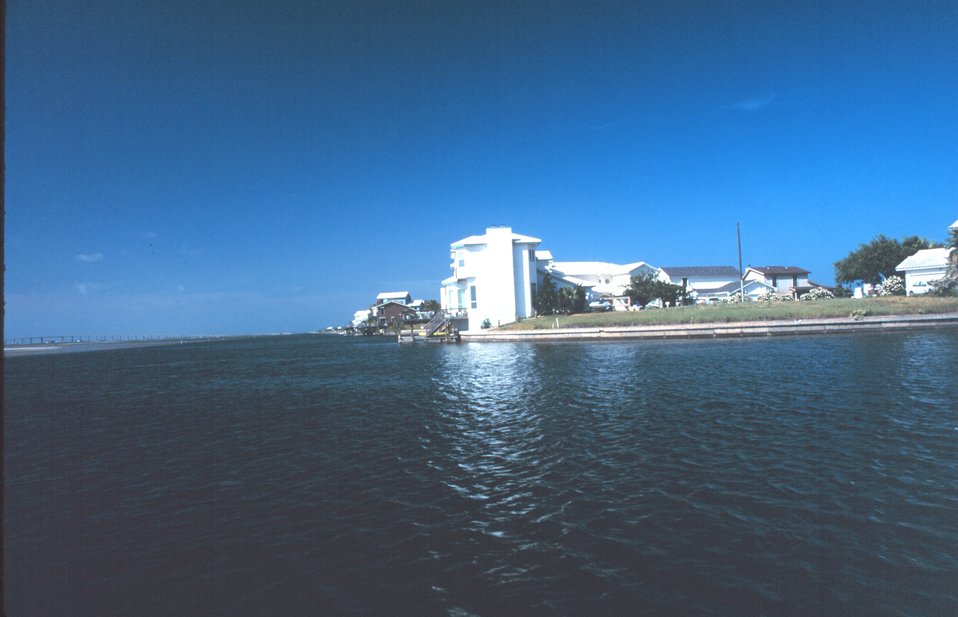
A resort area on the west side of Padre Island